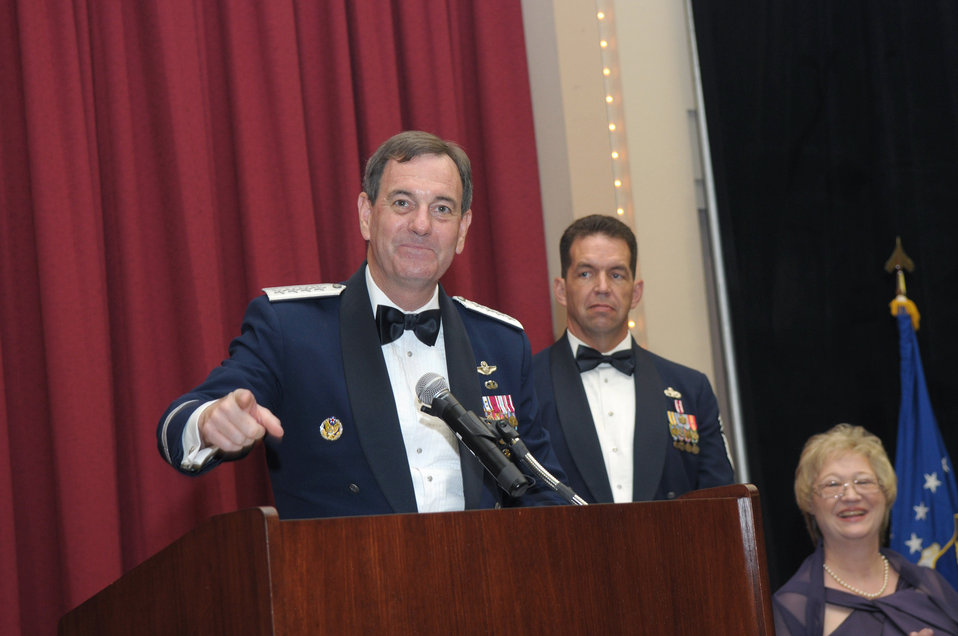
AETC inducts newest member into Order of the Sword

Gen. Stephen R. Lorenz addresses more than 300 AETC Airmen July 16, 2010, during his induction into the Order of Sword at the Gateway Club on Lackland Air Force Base, Texas. General Lorenz is the Air Education and Training Command commander.